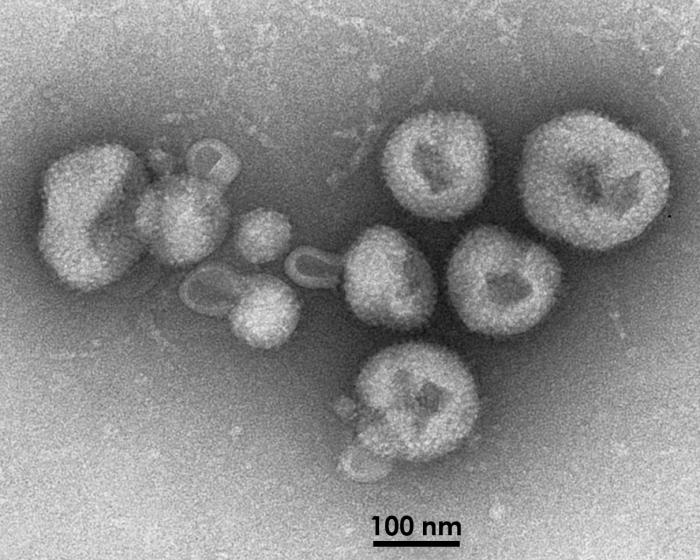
This transmission electron micrograph depicted eight virions (viral particles) of a newly-discovered virus, which was determined to be a member of the genus, Arenavirus. A cause of fatal hemorrhagic fever, it was confirmed that this virus was responsible for causing illness in five South Africans, four of whom died having succumbed to its devastating effects.